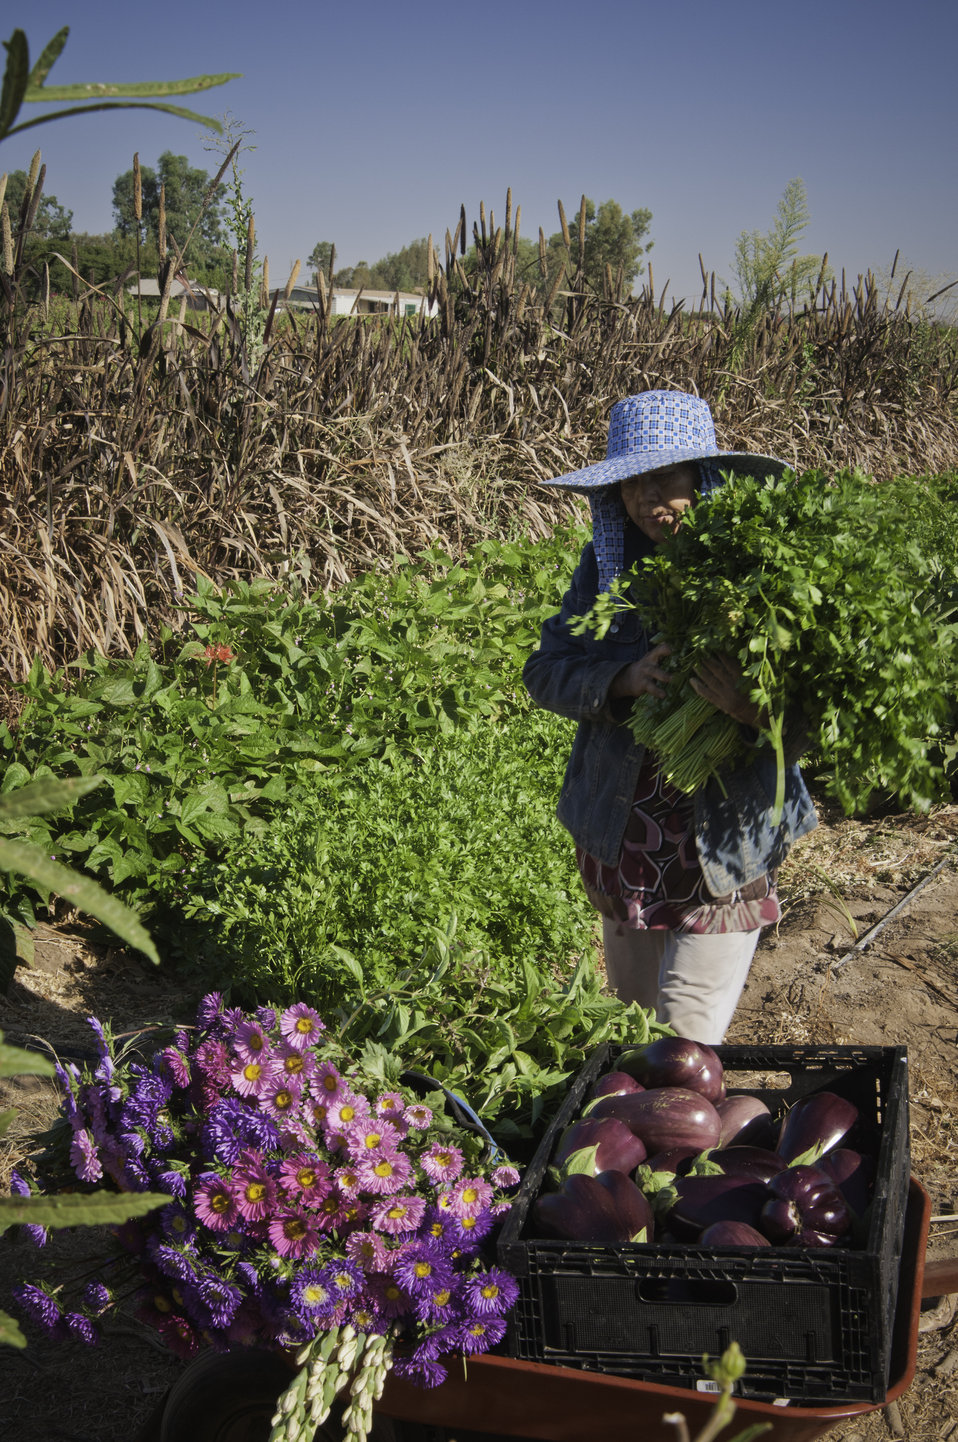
May Young Vu a Hmong farmer packing on a wheelbarrow on her farm May's Flower's in Sanger, California May Young Vu a Moung farmer taking opo squash harvested in the morning on her farm May's Flower's in Sanger, California to be packed for the farmers market in the afternoon on Thursday, August 29, 2013.